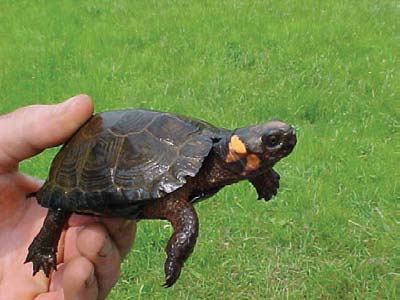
Bog turtle